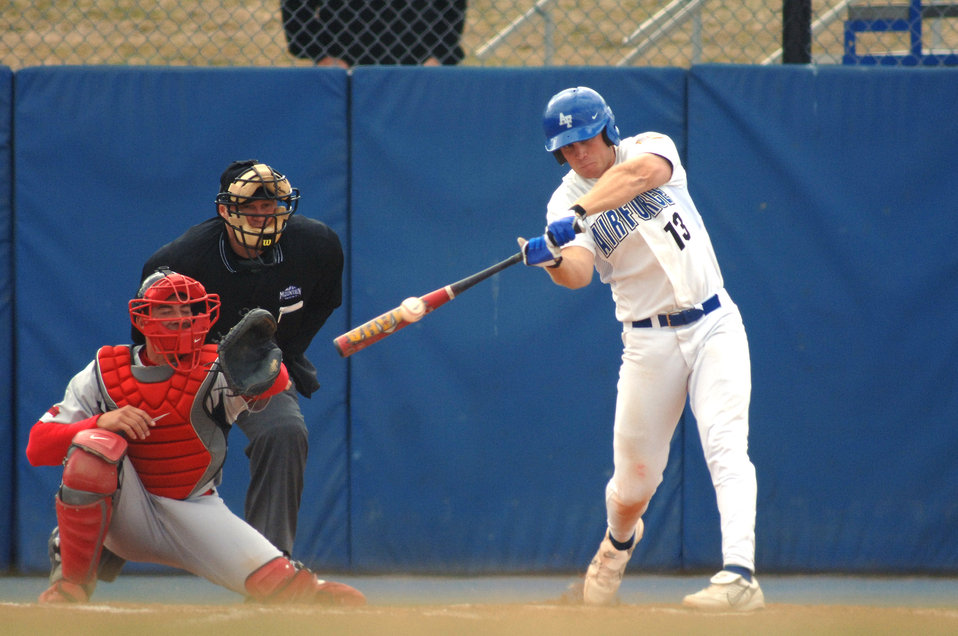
San Diego defeats Falcons

Senior Cadet Karl Bolt connects on the first of his two home runs during the 12-9 loss to San Diego State March 22. He hit his 31st and 32nd career home runs, moving him into seventh place all-time at the Academy. Cadet Bolt also drove in 6 RBI's.